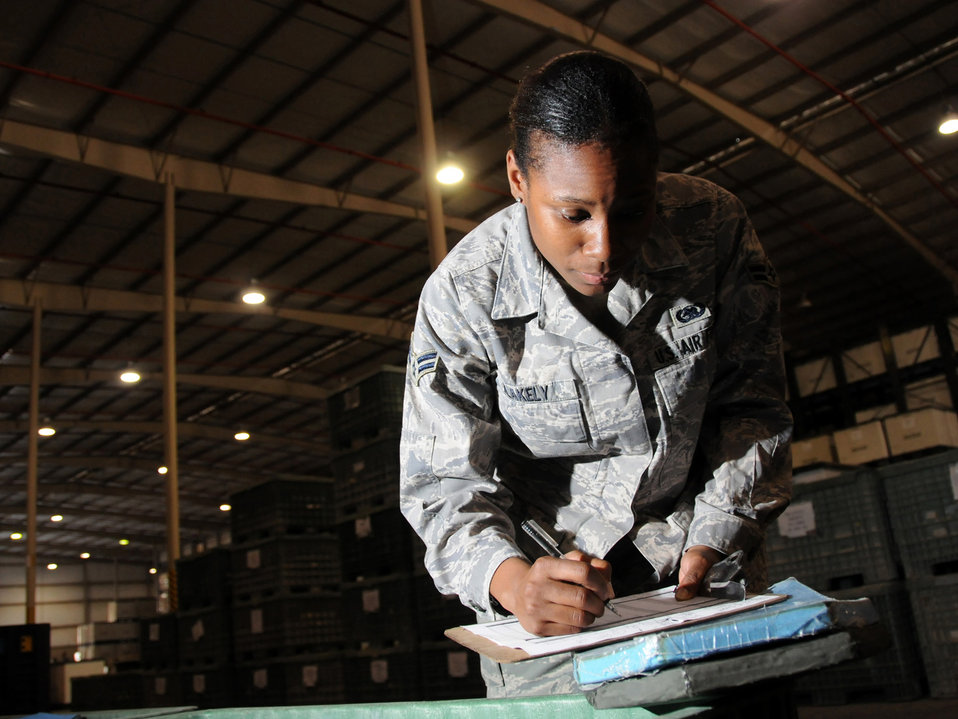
Distribution hub saves lives, money, extra luggage

Airman 1st Class Lateshia Blakely takes inventory of individual body armor plates stored at the expeditionary theater distribution center warehouse Oct. 1, 2009 in Southwest Asia. The ETDC warehouse stores mobility equipment to be issued to transient personnel as the deploy to forward bases. Airman Blakely, a 379th Expeditionary Logistics Readiness Squadron readiness technician, is deployed from Dover Air Force Base, Del.